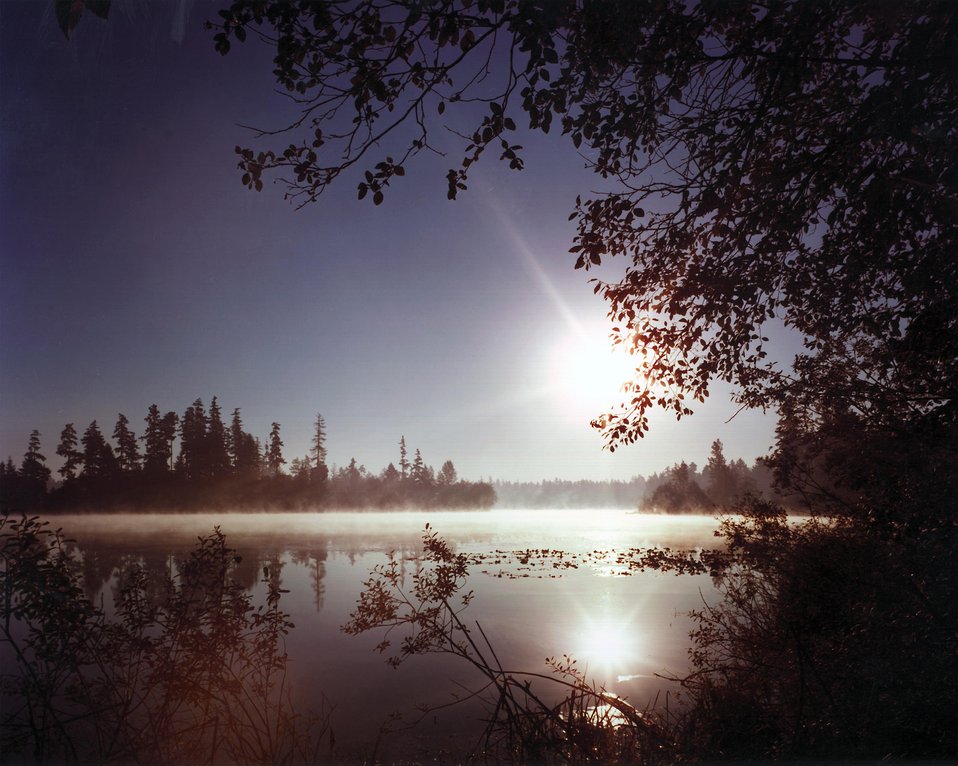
VIEW OF AMERICAN LAKE, NEXT TO THE SOLVENT REFINED COAL PILOT PLANT, FORT LEWIS, TACOMA, WASHINGTON.